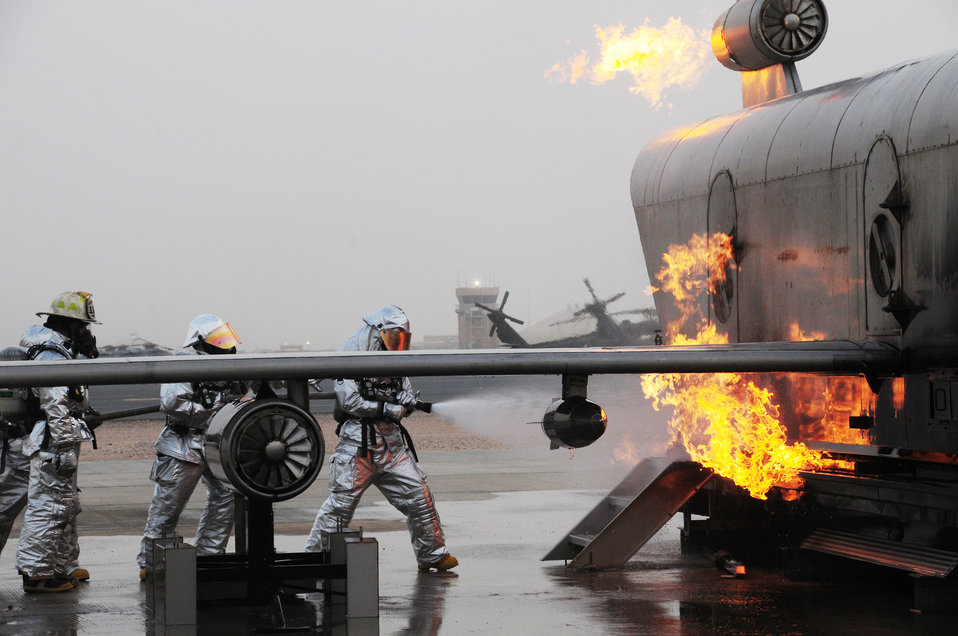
Firefighters test their skills during an annual training

Firefighters practice extinguishing an aircraft fire April 29, 2010, during fire training at an air base in Southwest Asia.